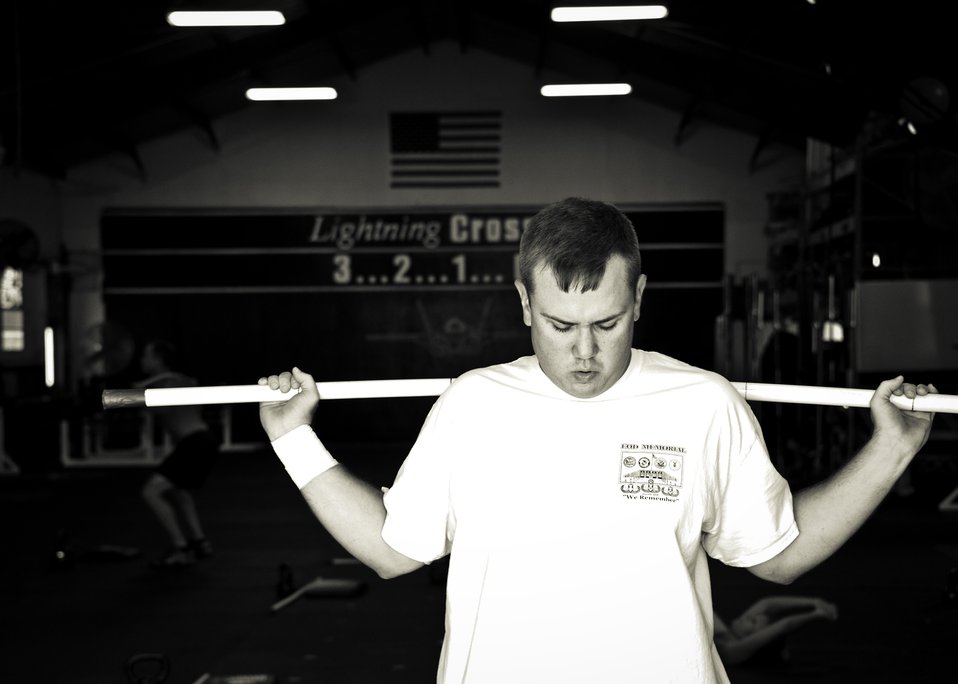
SSgt David Flowers

Staff Sgt. David Flowers warms up with some stretches before his workout June 28, 2011,at Eglin Air Force Base, Fla. The explosive ordnance technician was officially returned to duty in June after he lost his right leg and incurred major damage to his left leg in a land mine explosion in Afghanistan in 2009. In August, he is scheduled to begin training to be an EOD instructor at the Navy EOD School. Flowers is assigned to 366th Training Squadron, Det. 3.